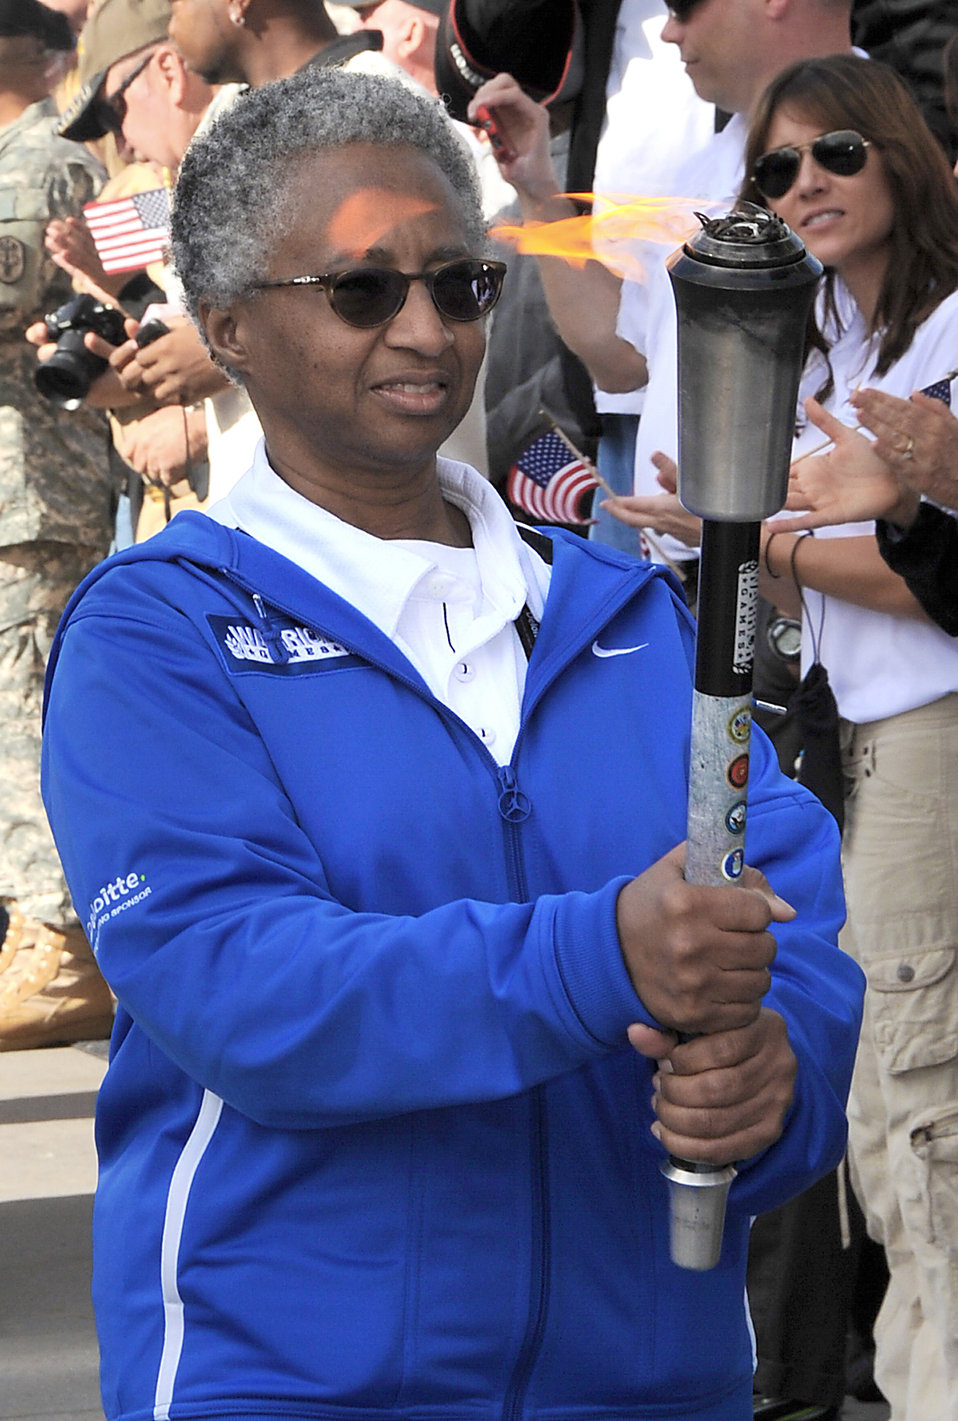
Warrior Games

Retired Maj. Gwendolyn Sheppard caries the torch during the opening ceremony of the 2011 Warrior Games May 16, 2011, in Colorado Springs, Colo. Major Sheppard was selected by her teammates for the honor of being the torch bearer for the Air Force team.